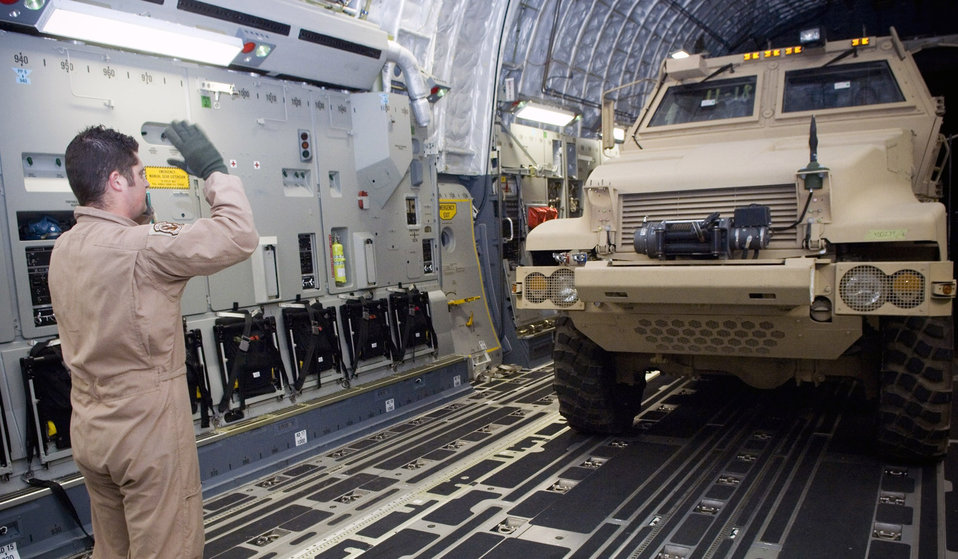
Balad aerial port bests cargo movement record

Airman 1st Class Grant Phillips marshals out a brand new mine resistant ambush protected vehicle to the flightline Dec. 8 at Balad Air Base, Iraq. Driving the MRAP is Senior Airman Christine Mirgon, a member of the aerial port team who set a new record for most cargo movement in a day Dec. 6. Airman Phillips is a C-17 Globemaster III loadmaster deployed from Charleston Air Force Base, S.C., and Airman Mirgon is a 332nd Expeditionary Logistics Readiness Squadron aerial porter deployed from Offut Air Force Base, Neb.